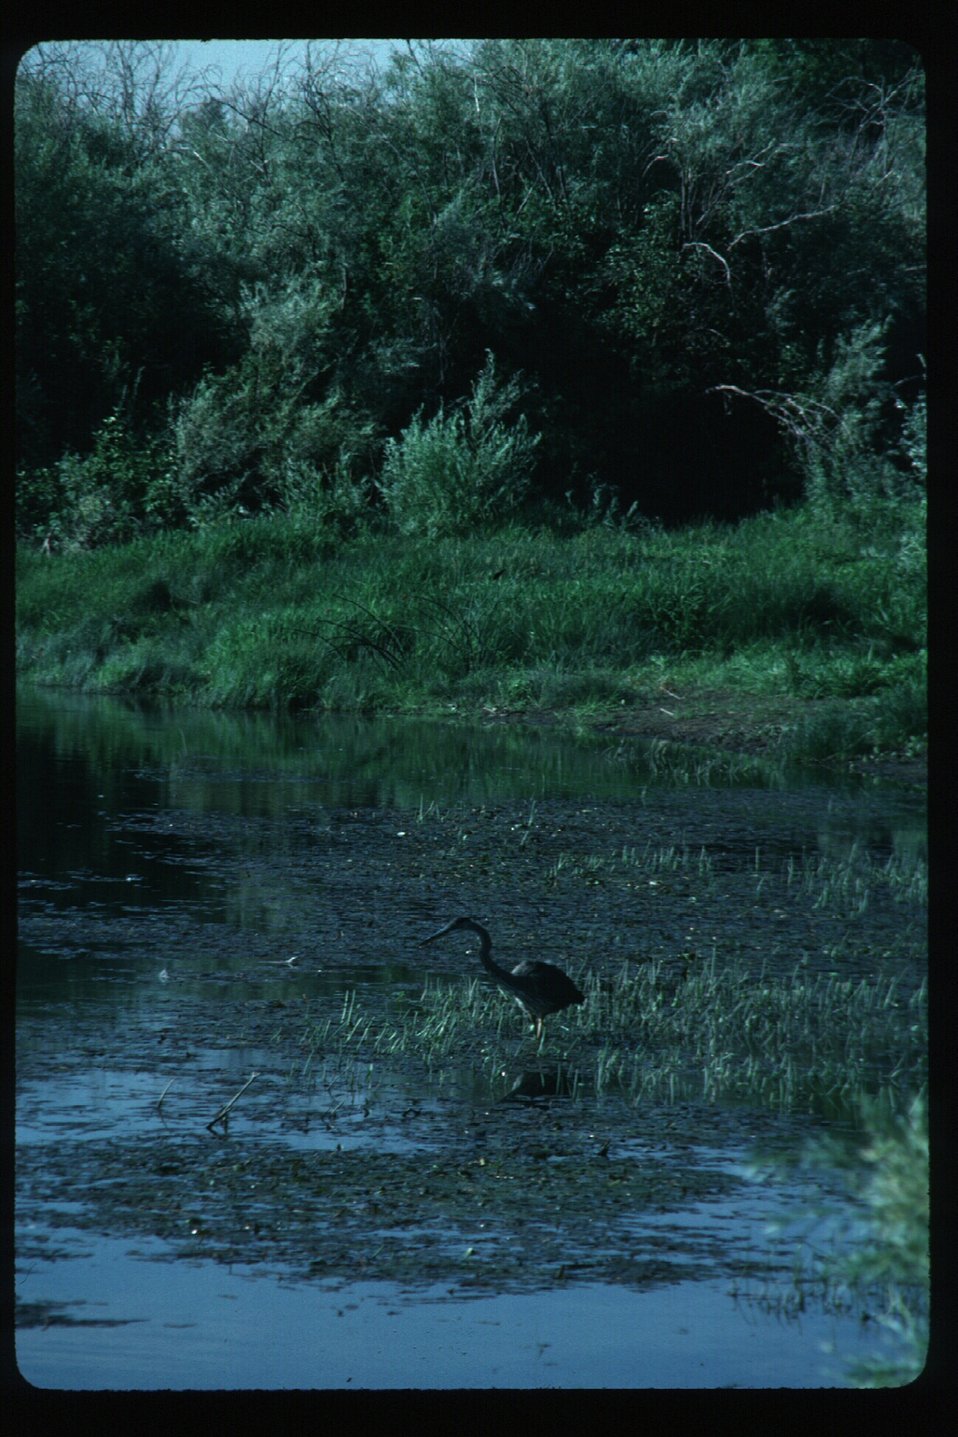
Crane in water Wildlife USRD Upper Snake River District